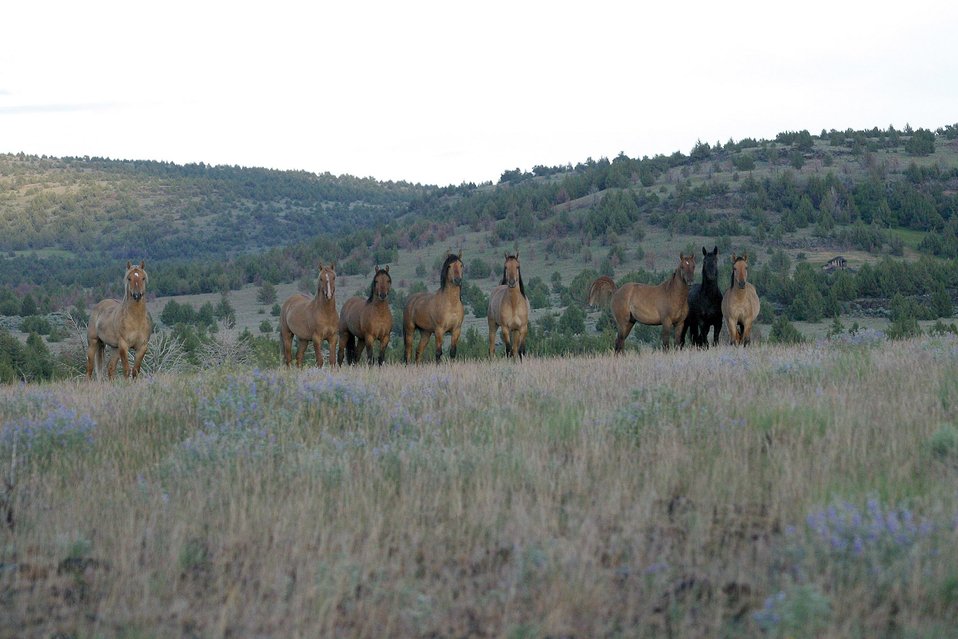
Wild Horse(s) in the Kiger Wild Horse Herd Management Area.